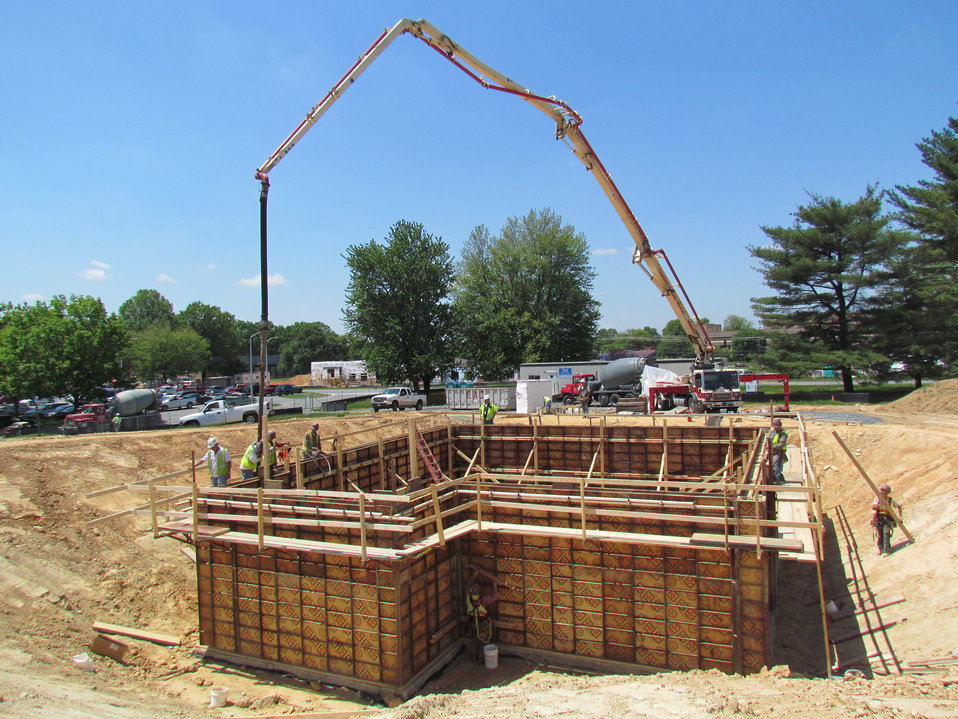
Net-Zero Energy Residential Test Facility - Construction photo showing filling of concrete basement wall forms.